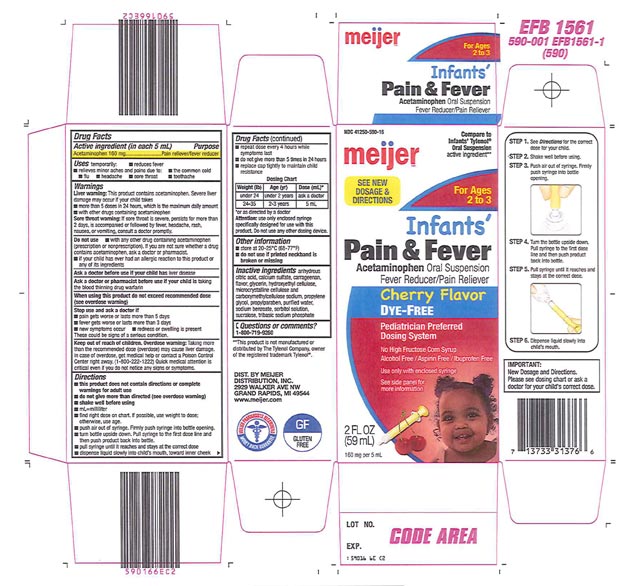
Recalled - Acetaminophen infant suspension liquid

November 1, 2013 – Product Recall – Perrigo Initiates Nationwide Voluntary Product Recall of Acetaminophen Infant Suspension Liquid, 160 Mg/5 Ml, Due to a Potential Defect with the Co-packaged Oral Syringe.